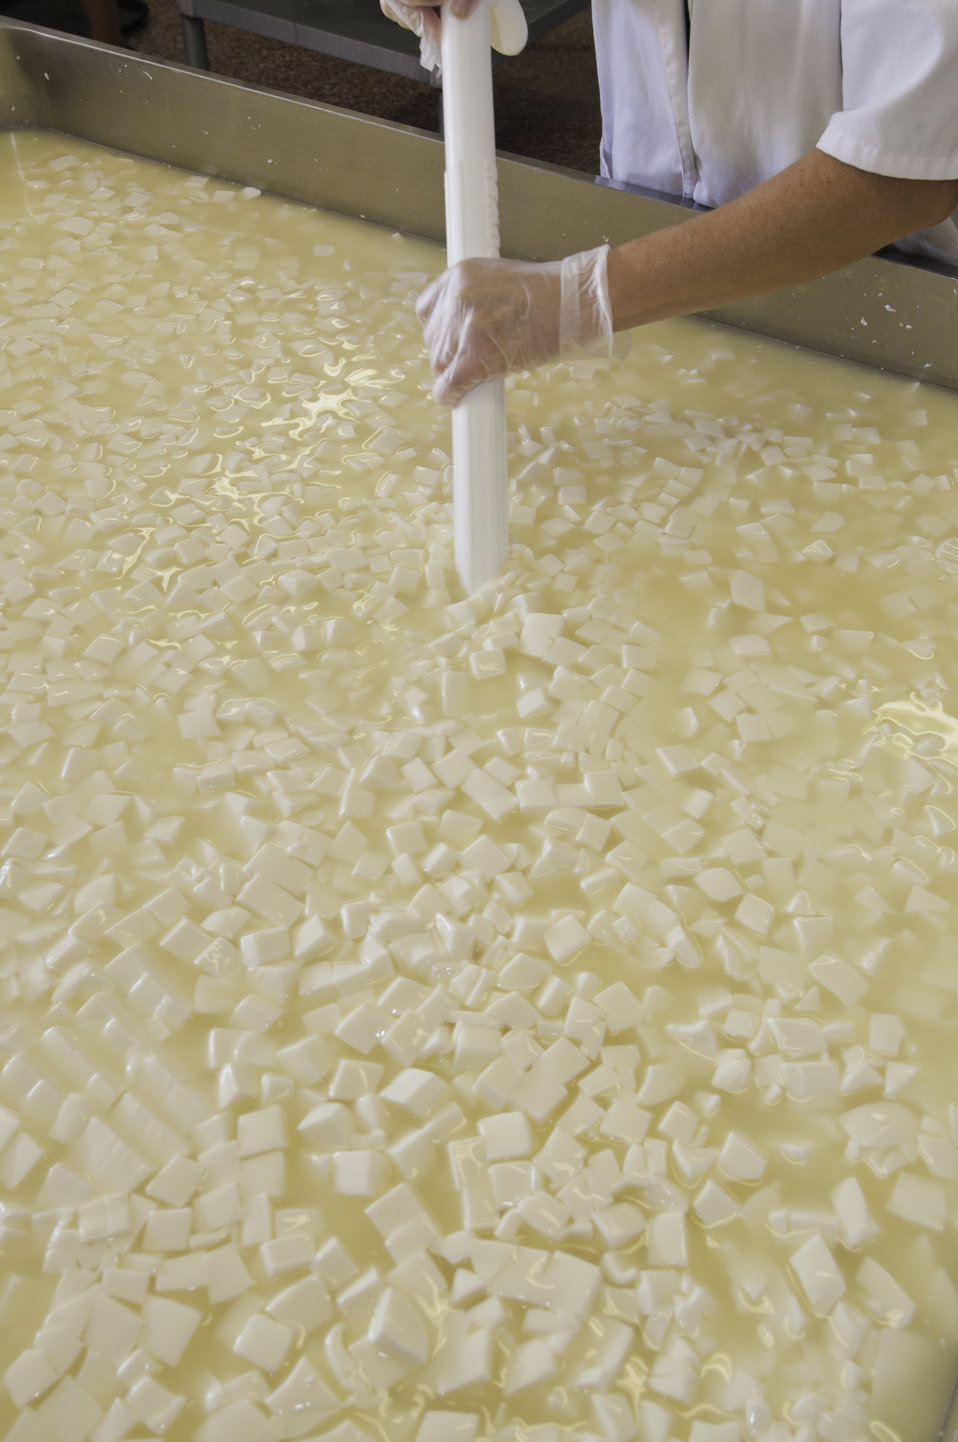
Chapel’s Country Creamery owner Holly Foster in Easton, MD has to constantly stir the milk curd of fresh raw milk so the milk curd that has been cut with curd knives does not set until whey has separated from the curd. The milk produced at the dairy is used to make artisanal cheeses. The dairy uses fresh raw milk 12-24 hours old. The milk is all-natural and contains no synthetic hormones, antibiotics, or chemical compounds. The 1150 pounds of milk in the vat will be used to make the dairy’s “Bay Blue” Cheese.